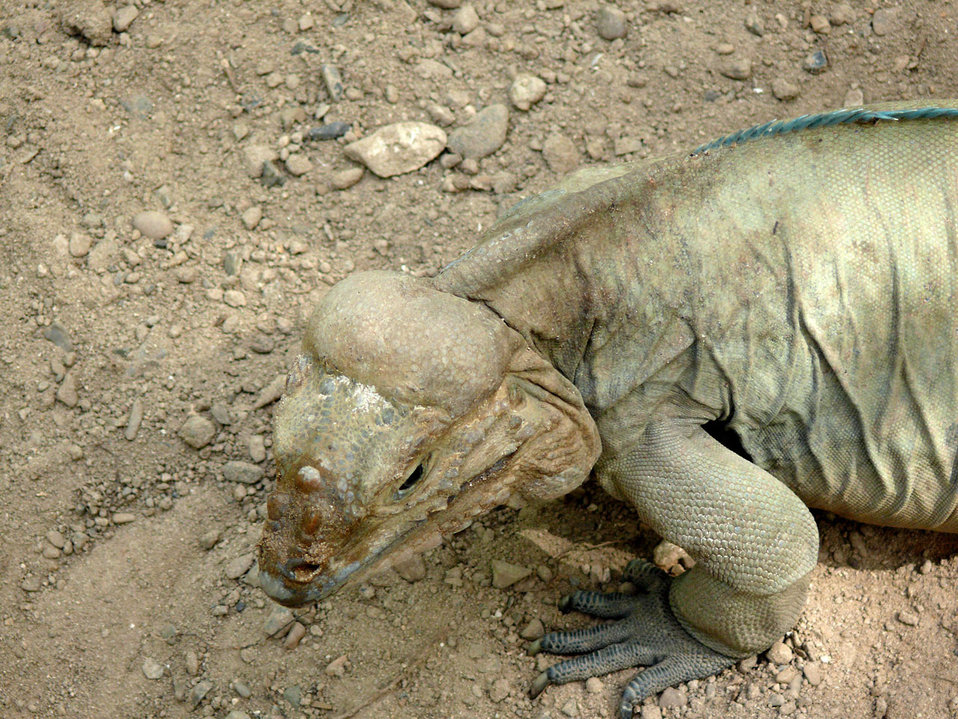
Iguana in nature environment.